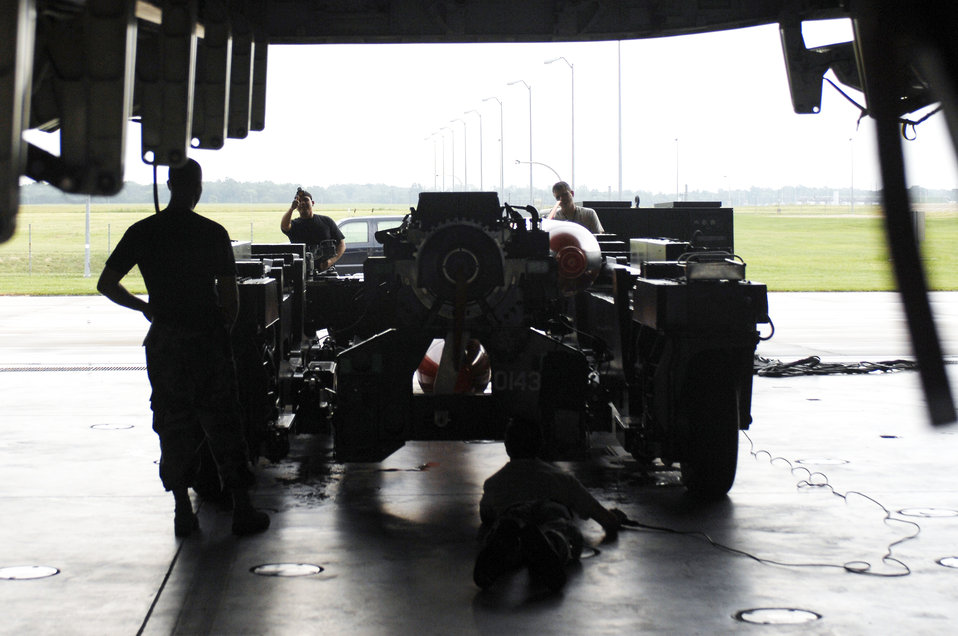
Whiteman Airmen test nuclear weapon mission

Members of a weapons load crew move a weapons load trailer into position under the bomb bay of a B-2 Spirit Aug. 17, 2009 at Whiteman Air Force Base, Mo. The weapons load is part of the 72nd Test and Evaluation Squadron's Combat Sledgehammer.